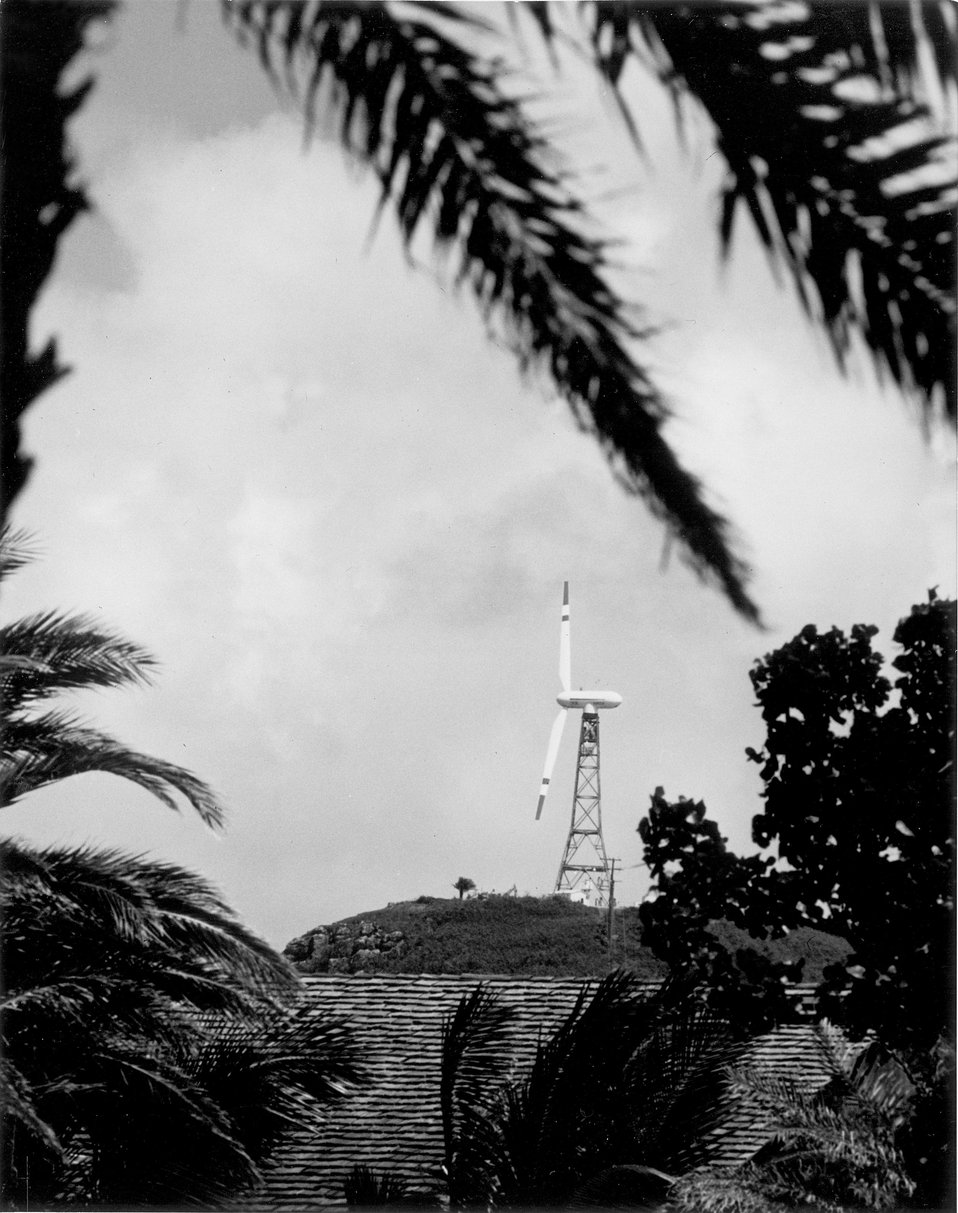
The ocean breezes off the north shore of Oahu, Hawaii, known for producing giant waves for the world's best surfing, now will be captured and converted into electricity. c. 1980